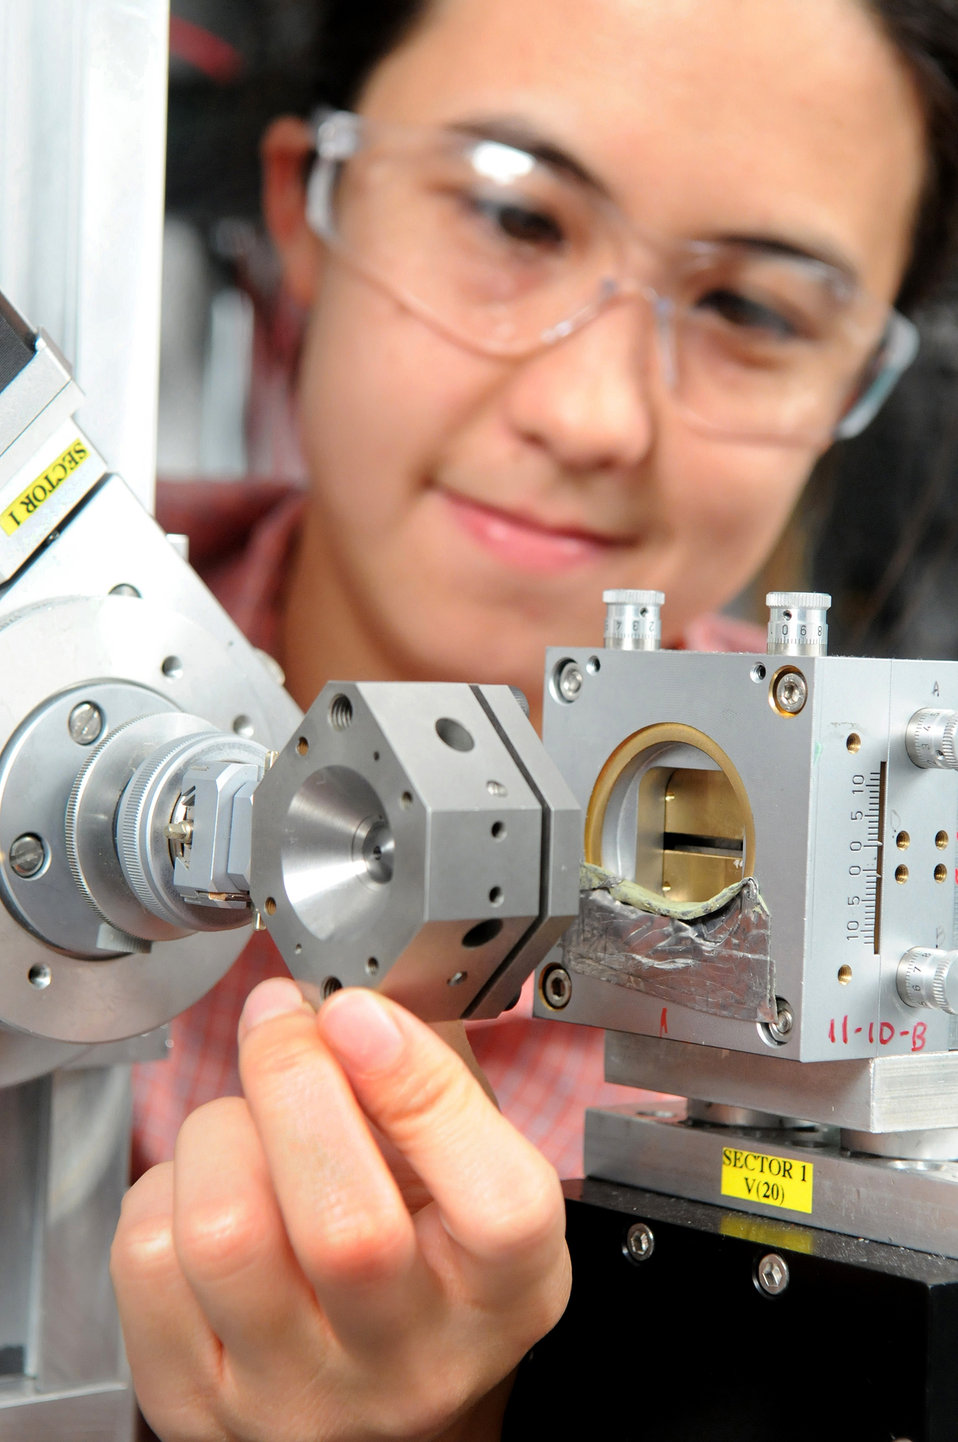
Argonne scientist Karena Chapman examines the diamond anvil pressure cell at the Advanced Photon Source.

Argonne National Laboratory scientist are putting pressure on metal-organic frameworks (MOF), they act like molecular-scale sponges.These MOF's have wide ranging potential uses for filtering, capturing or detecting molecules such as carbon dioxide or hydrogen storage for fuel cells. Since the MOF's do not fill space efficiently, the structures are particularly sensitive to even relatively moderate applied pressures. For any carbon or hydrogen gas storage application, the MOF materials which generally form as fine particles or small crystals will need to be compressed into pellets to optimize their volume capacity. Using a diamond anvil cell at the lab's Advanced Photon Source synthesized a copper-benzenetricarboxylate MOF and subjected its framework to various pressure with and without pressure-transmitting fluids.